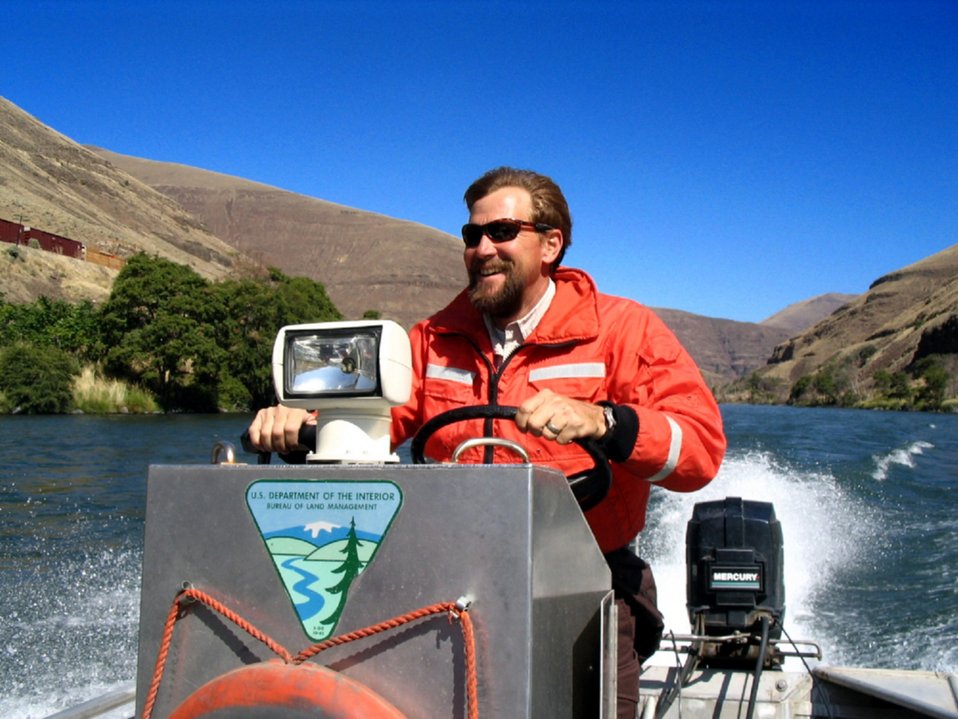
John on river patrol on the Lower Deschutes River. Steve Storo, Prineville BLM at Work2